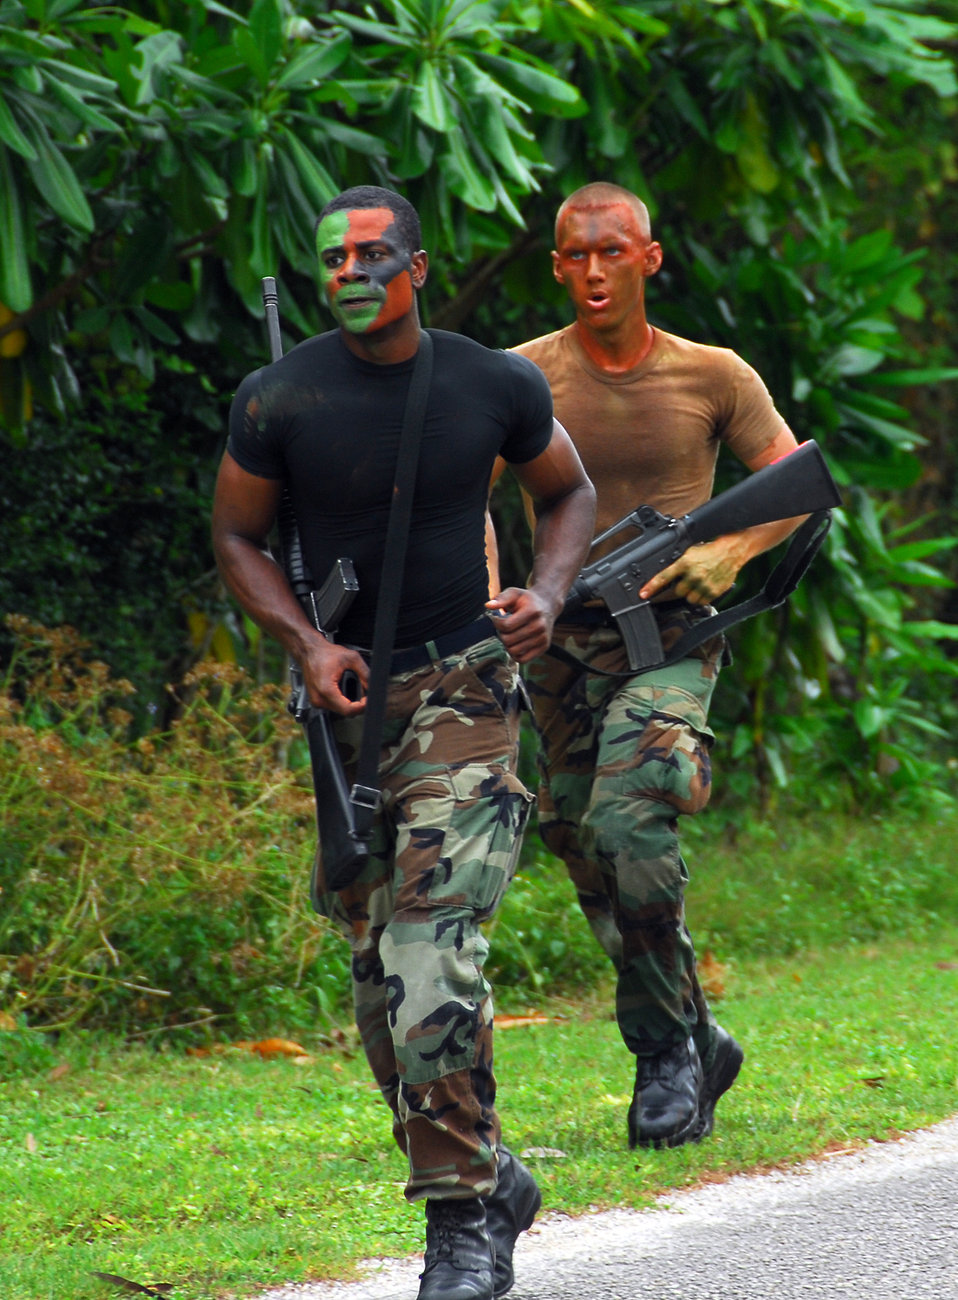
Competition challenges Airmen's warfighting abilities

Staff Sgt. Christopher Berry (front) and Airman 1st Class Bryan Nagy, both from the 36th Communications Squadron, run 2.3 miles to Checkpoint 6 during the Warrior Day competition Jan. 25 at Andersen Air Force Base, Guam. The competition simulates challenges Airmen may face in combat.